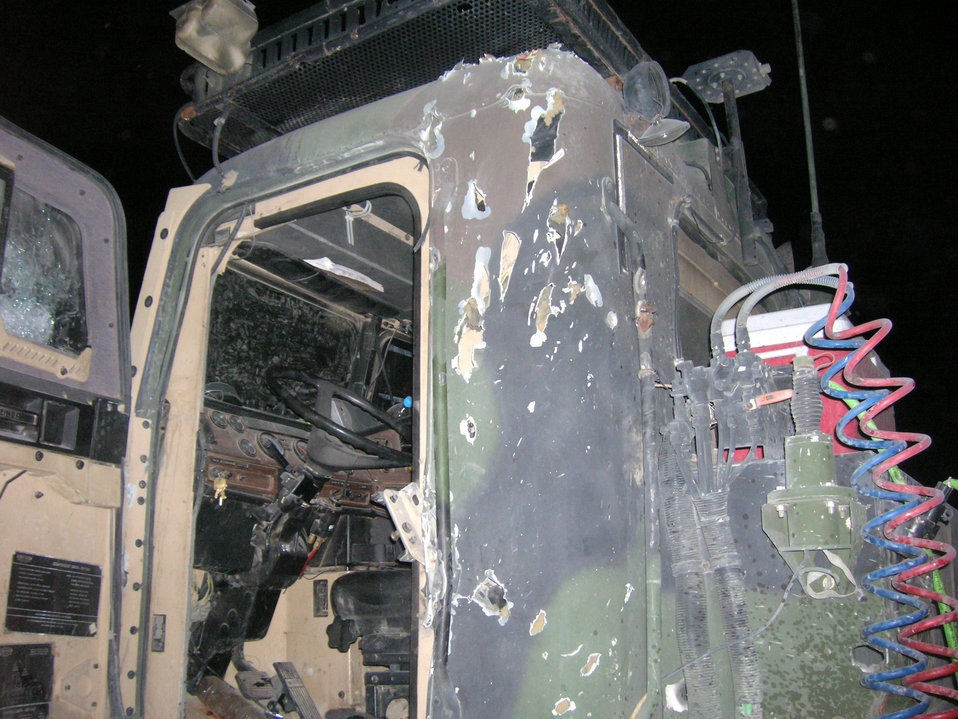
Life changes in a matter of seconds

The results of an improvised explosive device are shown on a truck driven by Airman 1st Class Joshua Collins on July 20. Airman Collins, assigned to the 70th Medium Truck Detachment, suffered shrapnel wounds to his left ankle. He was treated at the Air Force Theater Hospital at Balad Air Base, Iraq, and sent through the Contingency Aeromedical Staging Facility to Germany.